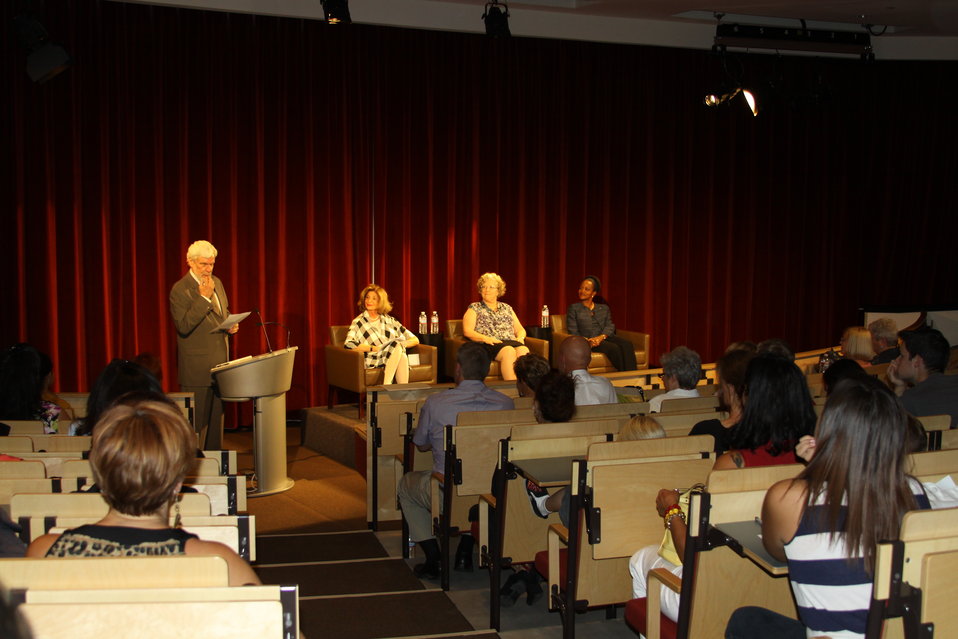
Dean of UNLV School of Liberal Arts Introduces Assistant Secretary Brimmer

Dean of UNLV School of Liberal Arts introduces panelists for the event, “Shattering the Glass Ceiling: Empowering Women in Leadership, Diplomacy, and Government,” in Las Vegas, Nevada, on September 1, 2011. Panelists from left to right include: Nevada Congresswoman Shelley Berkley; Dr. Joanne Goodwin, Director of Women’s Research Institute of Nevada; and Esther Brimmer, Assistant Secretary of State for International Organization Affairs.